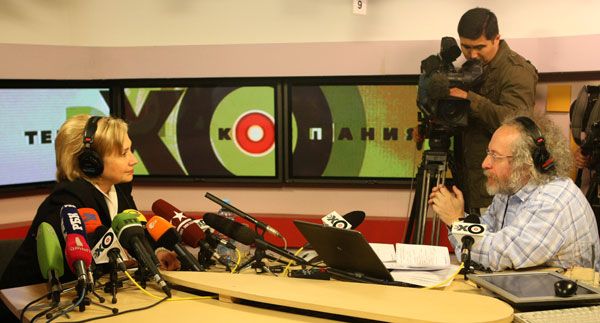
Aleksey Venediktov Interviews Secretary C2009 1012 Aleksey Sviridov Deputy State Protocol Department of the Russian Ministry of Foreign Affairs and U.S. Ambalinton

Aleksey Venediktov at Radio 'Echo Moskvy' interviews U.S. Secretary of State Hillary Rodham Clinton in Moscow, Russia, October 14, 2009.